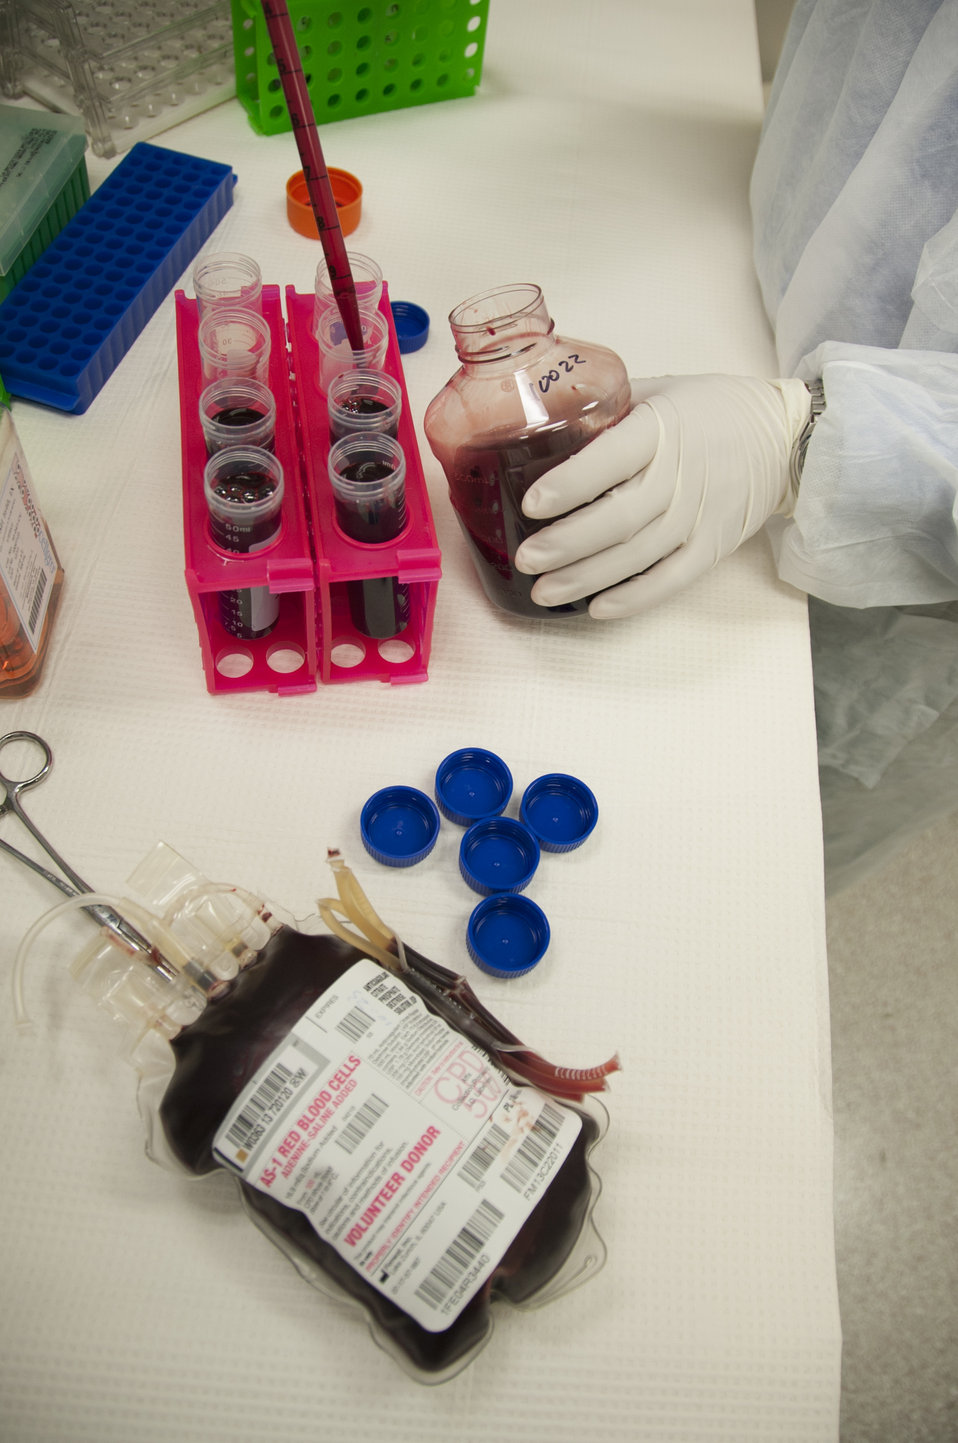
Blood Research: Saving Lives (8337)

Jason Liu, Ph.D., laboratory chief at FDA’s Office of Blood Research and Review, transferring blood to 50 ml tubes as he prepared to isolate blood components. A unit of whole blood can be separated, for example, into platelets and red blood cells. The separated components can be studied separately and can be used for different patients with different needs. FDA is responsible for the safety of our nation’s blood supply and is at the forefront of evaluating and encouraging innovative technologies for protecting it.

Read this Consumer Update to learn more: Advances in Saving Lives with Blood